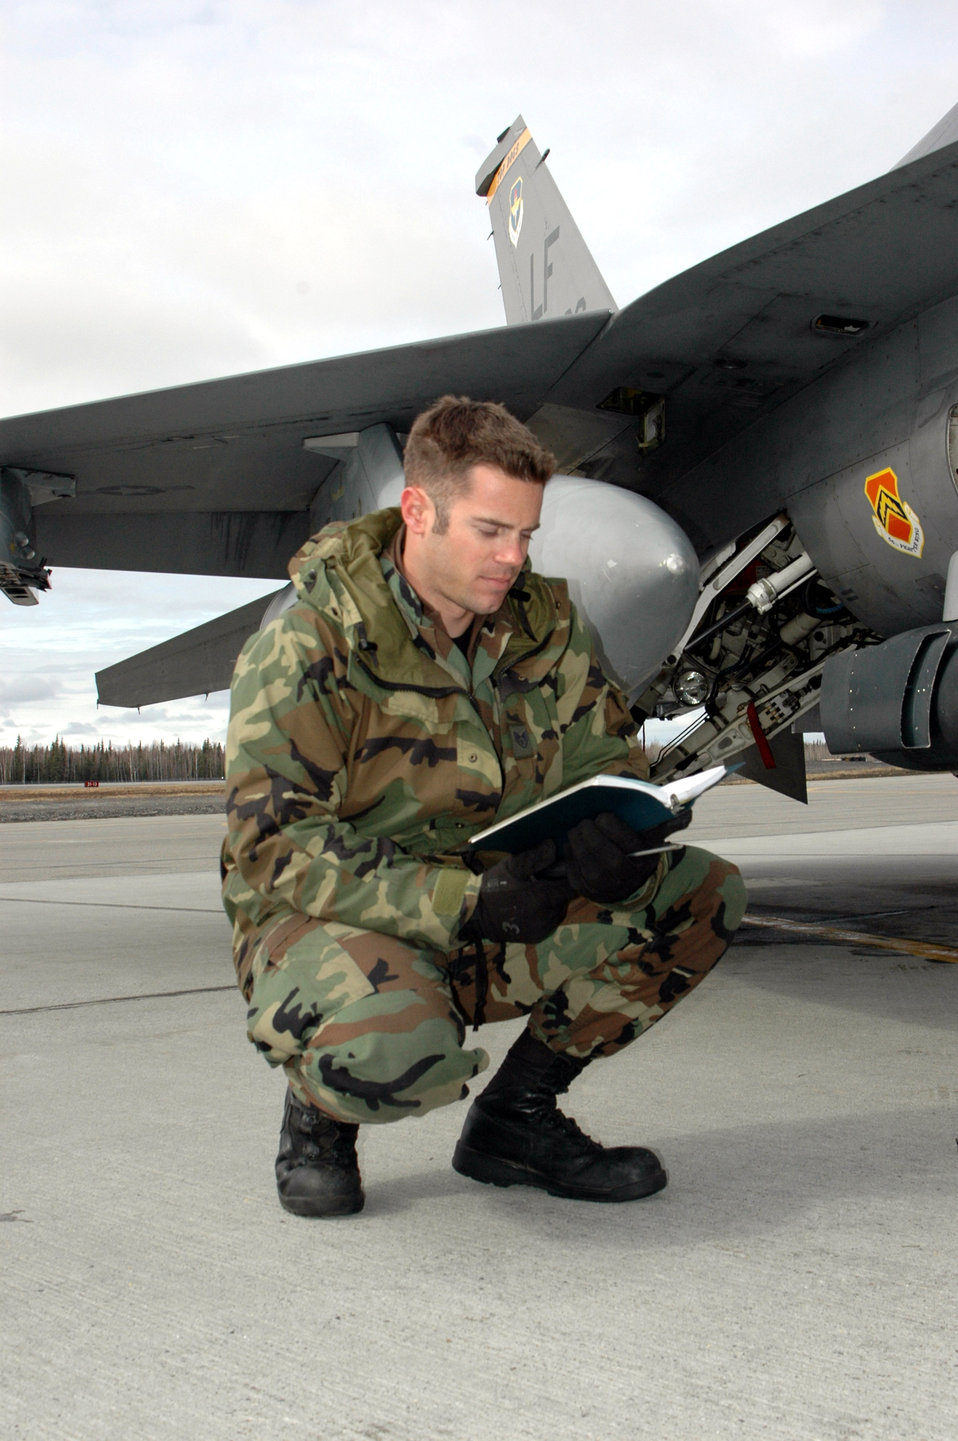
Luke team trains for combat at Red Flag-Alaska

Staff Sgt. Craig Bair reads a checklist before performing maintenance on an F-16 Fighting Falcon April 11 during Red Flag-Alaska 07-1 on the flightline at Eielson Air Force Base, Alaska. Red Flag-Alaska is a Pacific Air Forces-directed field training exercise flown under simulated air combat conditions. It is conducted on the Pacific Alaskan Range Complex with air operations flown out of Eielson and Elmendorf Air Force bases. Sergeant Bair is a 61st Fighter Squadron crew chief.